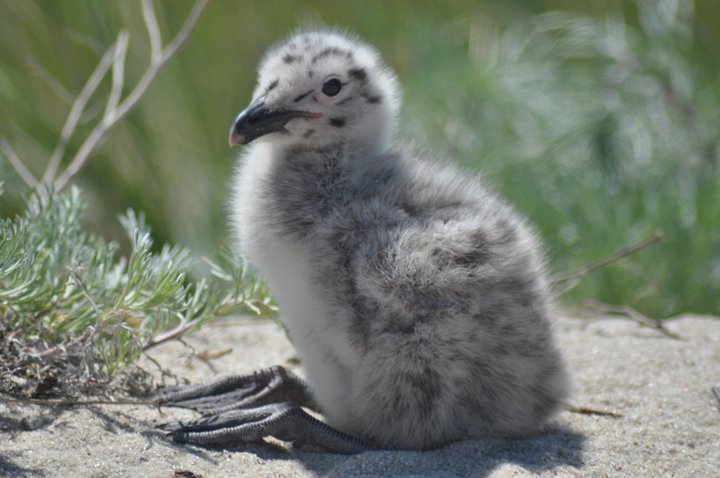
Great Black-Backed Gull Chick

A great black-backed gull chick at the Nantucket National Wildlife Refuge, MA.